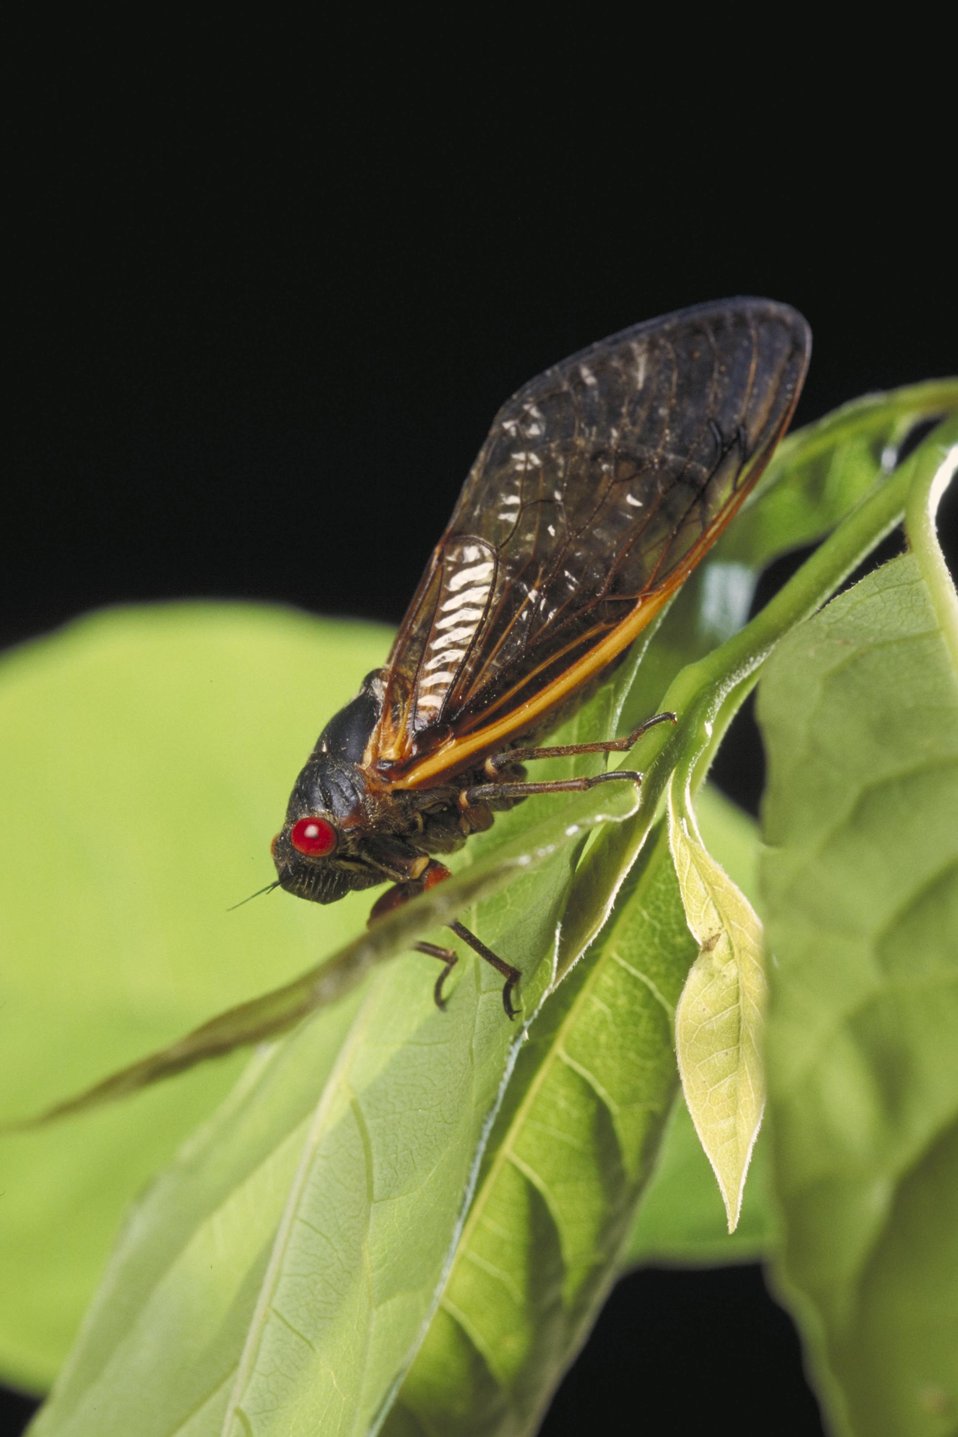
In the early spring of 2013 the eastern half of the U.S. will see and hear the emergence of the 17-year Cicada (Magicicada). The 17-year Cicada is a large insect with a black body, red eyes, and delicate wings about an inch and a half long. The Cicada will emerge from the ground as nymphs, climb onto trees and shed their skins. The males will then sing loudly to attract female mates. Once mated the females lay approximately 400 to 600 eggs in tree branches before they die. The nymphs hatch and burrow into the ground and live underground for the next 16 years sucking sap out of tree roots. The cicada’s above ground cycle lasts about a month before they die. Cicada’s have no sting or bite and are harmless to humans and pets, however the constant singing is annoying.